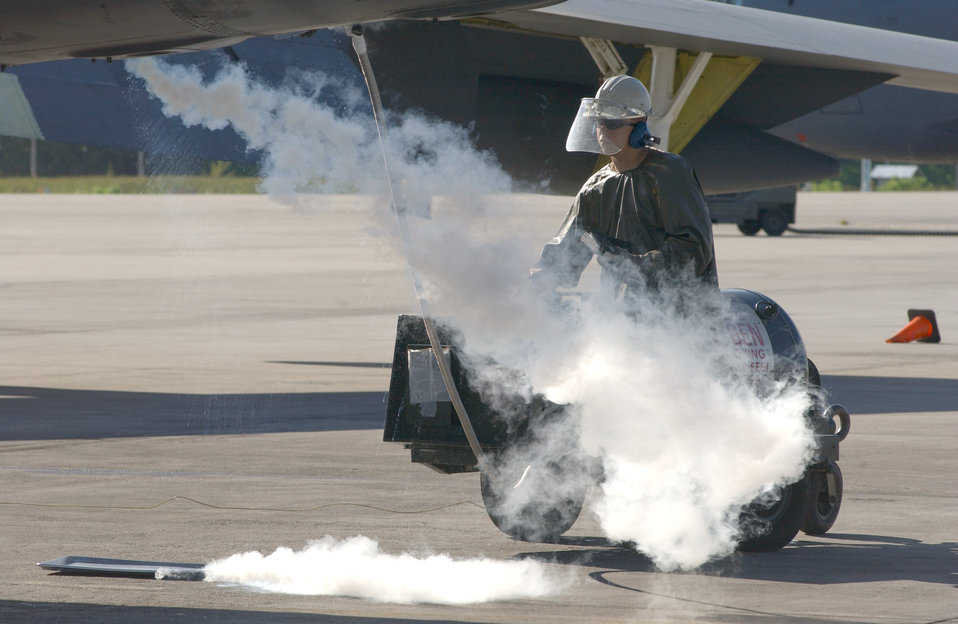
LOX and go

OPERATION ENDURING FREEDOM -- Airman 1st Class Nathan Jacobson performs liquid oxygen service on a B-52 Stratofortress at a forward-deployed location. He is a crew chief deployed to the 40th Expeditionary Maintenance Squadron.